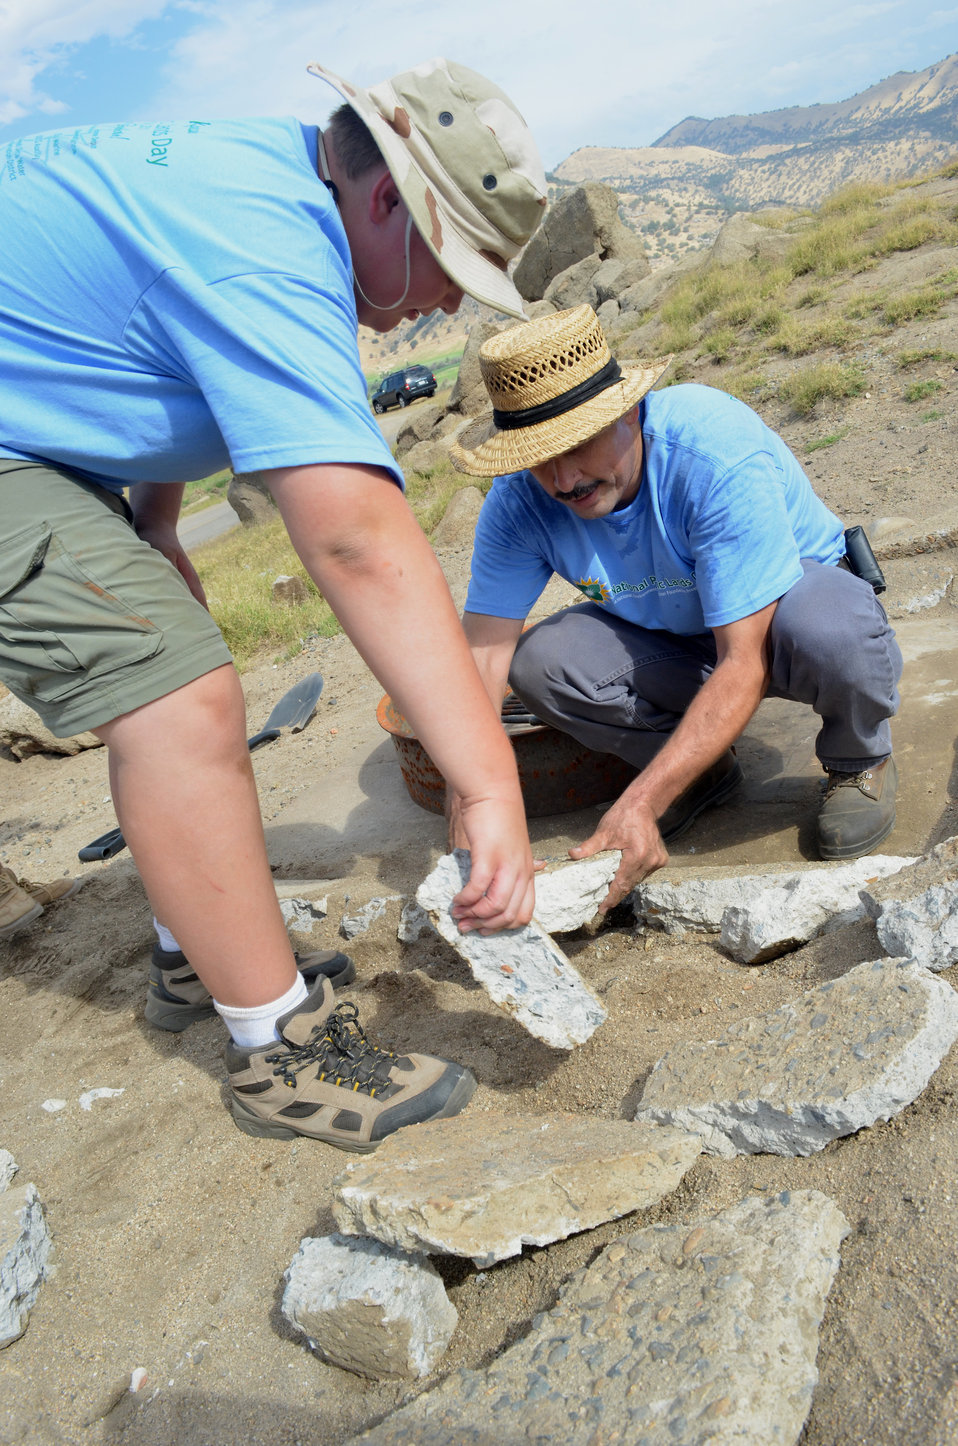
National Public Lands Day at Lake Kaweah

Volunteers from Boys Scout Troop 274 work on a walkway at Lake Kaweah near Lemon Cove, Calif., Sept. 24 in celebration of National Public Lands Day. Around 100 volunteers turned out to help at Lake Kaweah, one of seven U.S. Army Corps of Engineers Sacramento District recreation parks that participated in the event.